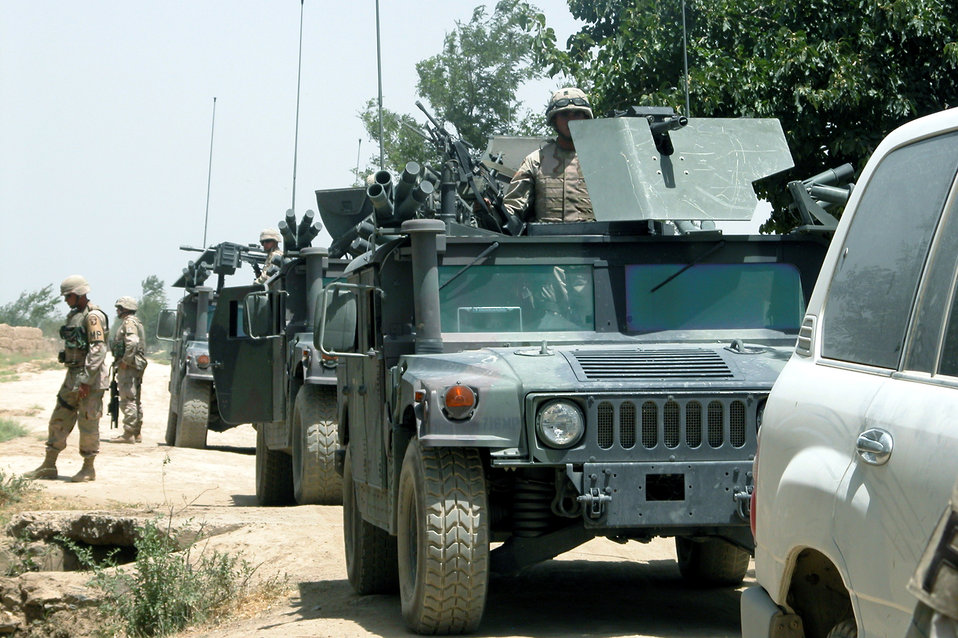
Keeping Bagram safe

BAGRAM AIR BASE, Afghanistan -- Air Force Office of Special Investigation agents and Army military police respond to a rocket attack.